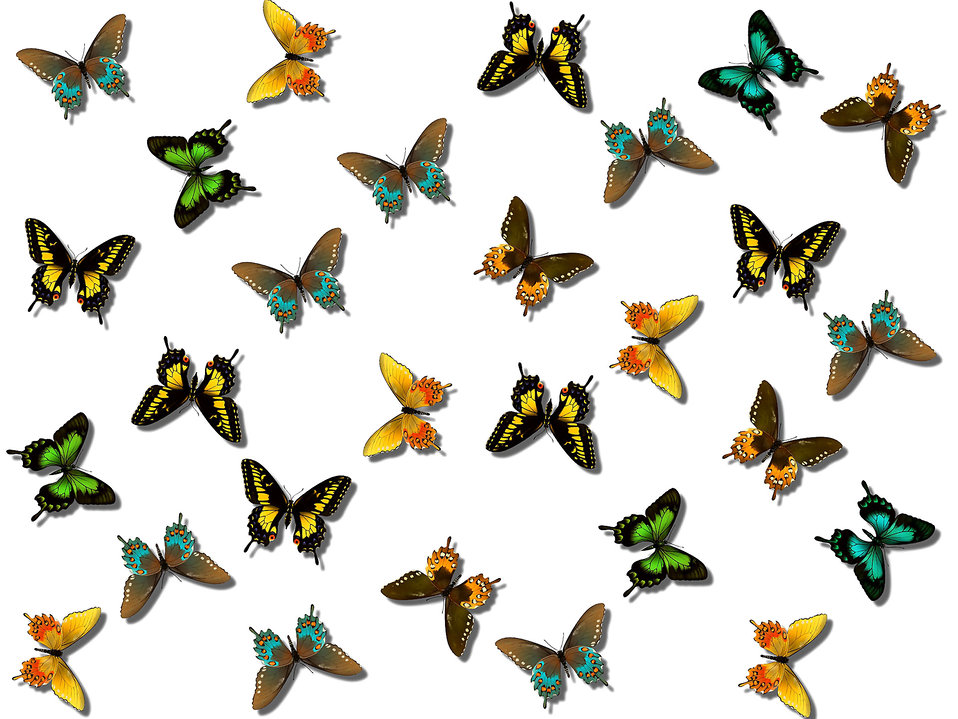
Background 312

Background.